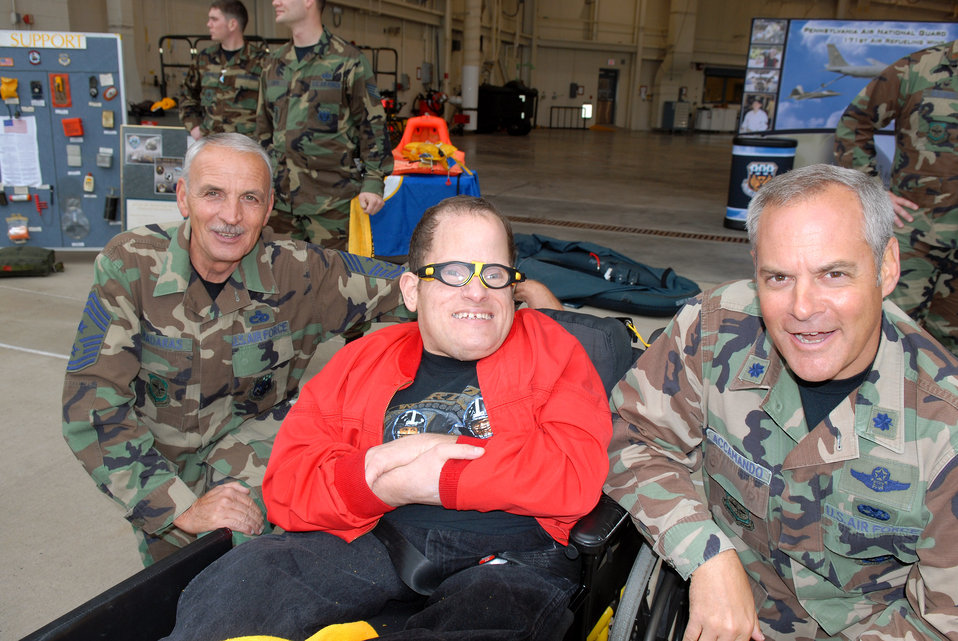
Air Guard unit shows off its 'Steel City Pride'

Chief Master Sgt. Paul Madaras and Lt. Col. Don Accamando discuss football with Jimmy Oct. 18. Jimmy and other residents of nearby Allegheny Valley School along with members of the Pittsburgh Steelers football organization were on hand to help the Airmen of the Pennsylvania Air National Guard's 171st Air Refueling Wing christen the new